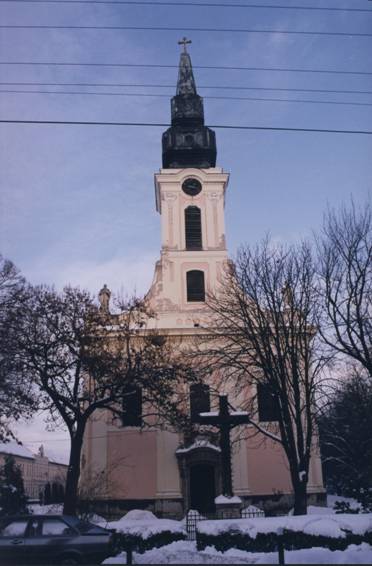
Magyar: saját kép, Szent Anna Templom